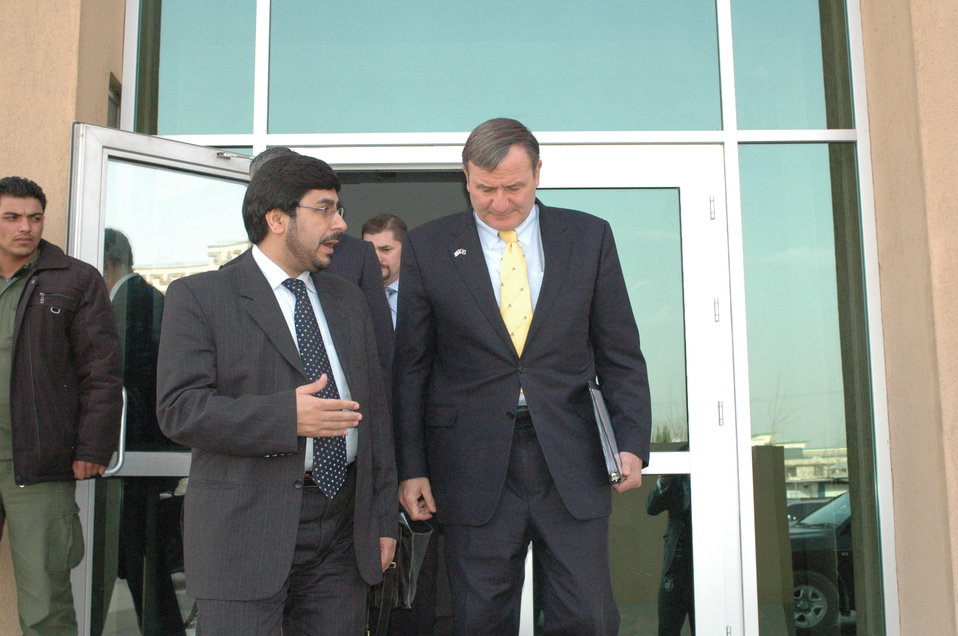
Community Based Stabilization Grants Ceremony, December 7, 2010